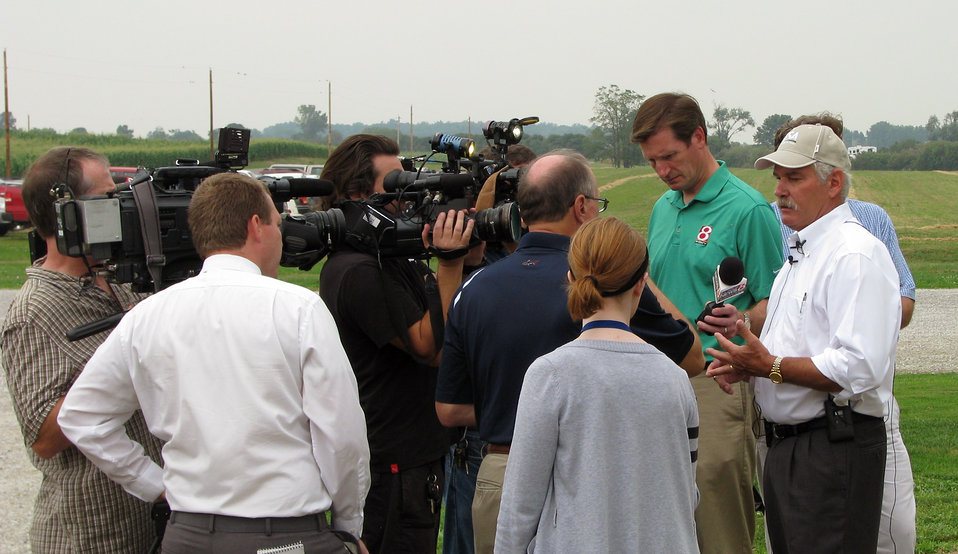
Agriculture Under Secretary for Farm and Foreign Agriculture Service (FFAS) Michael Scuse speaks to the media in Whiteland, IN on Thursday, July 19, 2012. Agriculture Secretary Vilsack has instructed Agriculture subcabinet leaders to travel to affected drought areas to augment ongoing assistance from state-level U.S. Department of Agriculture (USDA) staff and provide guidance on USDA’s new, streamlined disaster process. The U.S. Drought Monitor currently reports that 61 percent of the continental United States is in a moderate to exceptional drought.